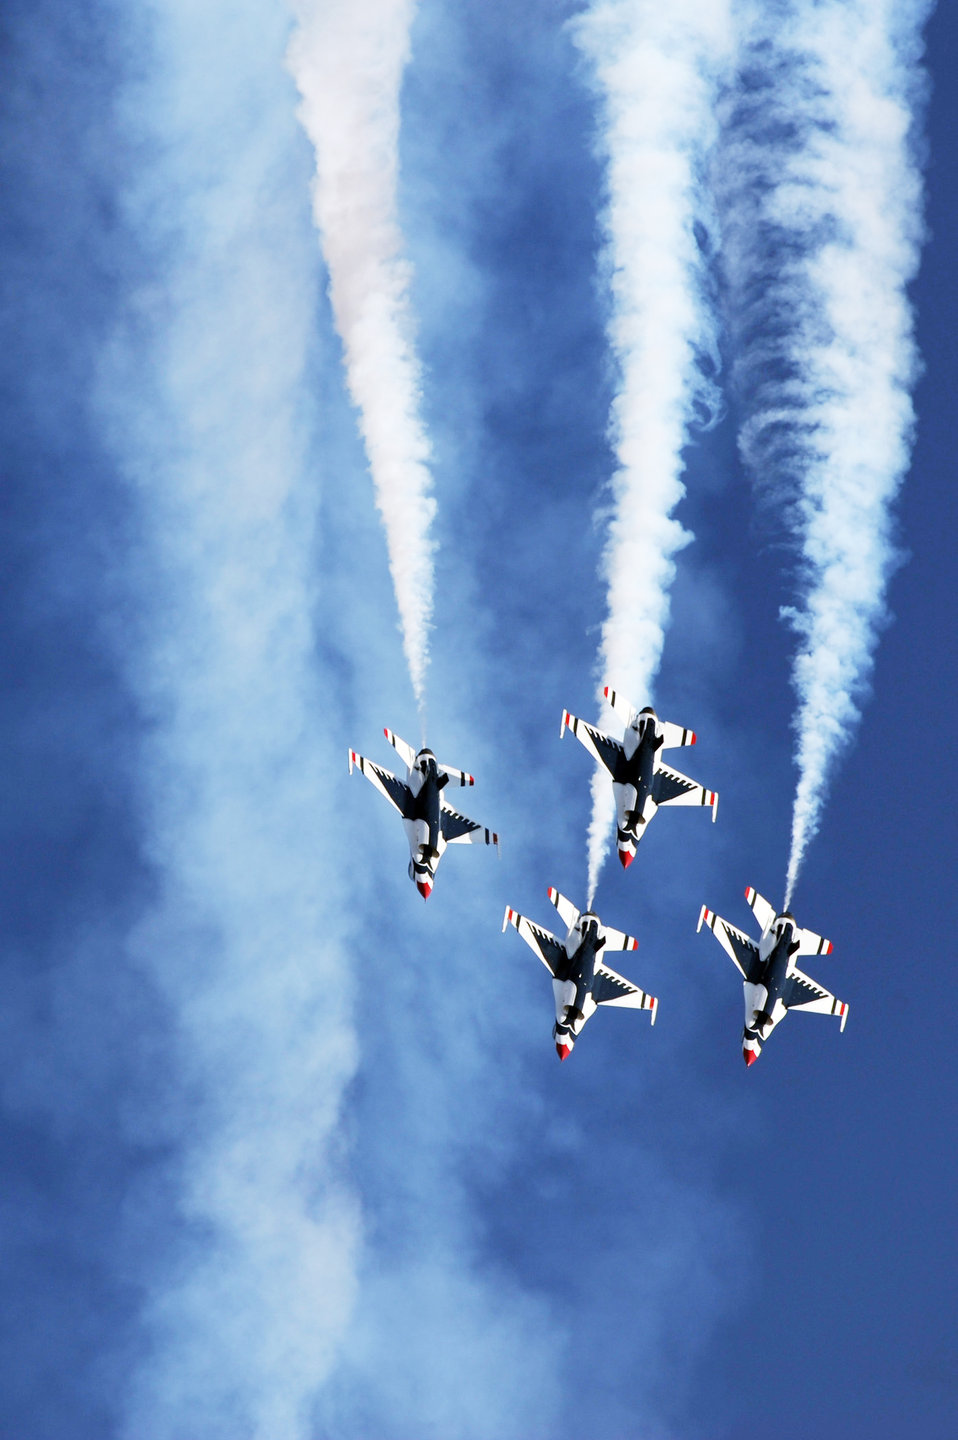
Precision loop

F-16s with the U.S. Air Force Air Demonstration Team Thunderbirds fly the arrowhead loop Nov. 13, 2009, during the 2009 Nellis Air Force Base, Nev., open house. The open house is an opportunity for the Las Vegas community to view aerial demonstrations and static displays of various aircraft from the military.